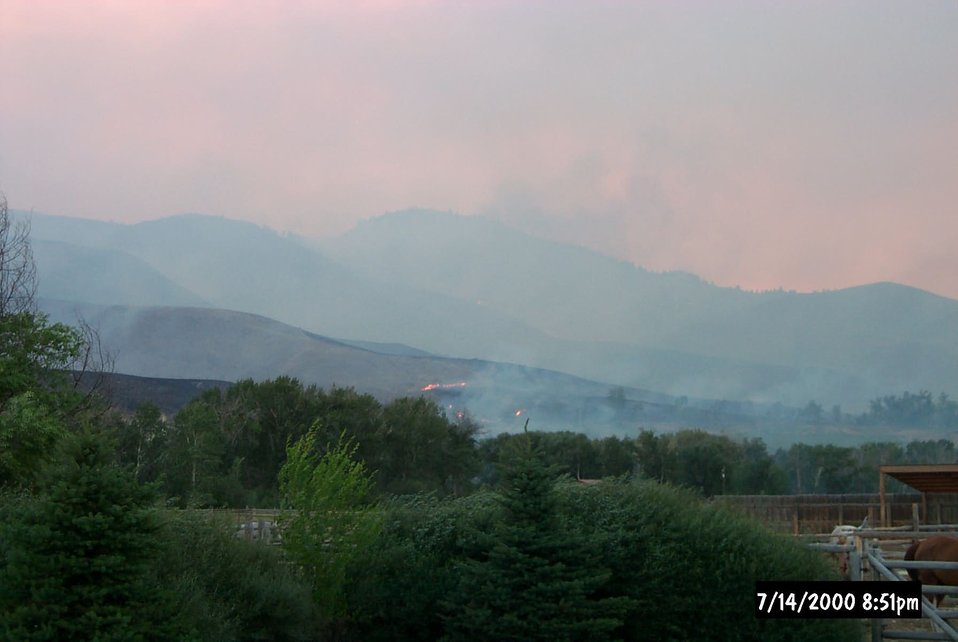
Fire Fenster Fire Salmon Field Office USRD Upper Snake River District